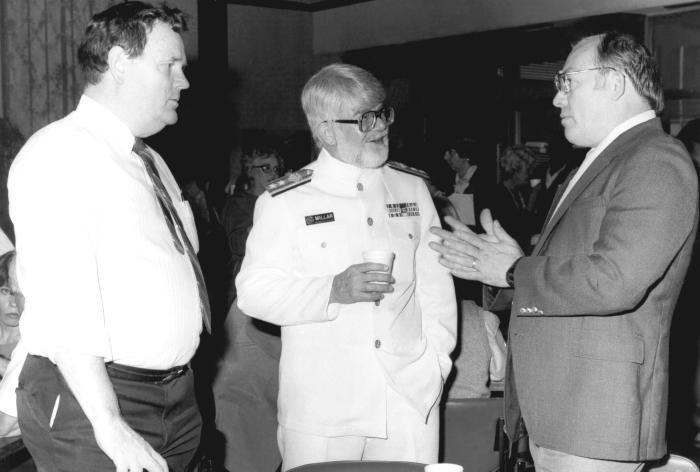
From left to right, this photograph showed Mr. Bill Griggs, J. Donald Millar, M.D., D.T.P.H., and Burton Lincoln during a 1988 CDC event.